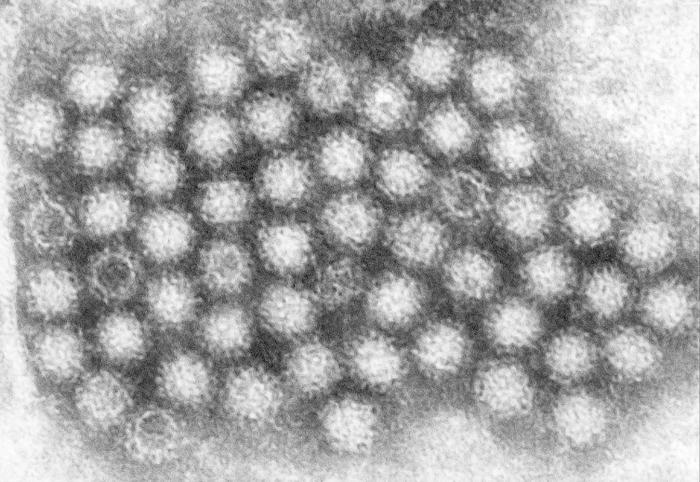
This transmission electron micrograph (TEM) revealed some of the ultrastructural morphology displayed by norovirus virions, or virus particles.